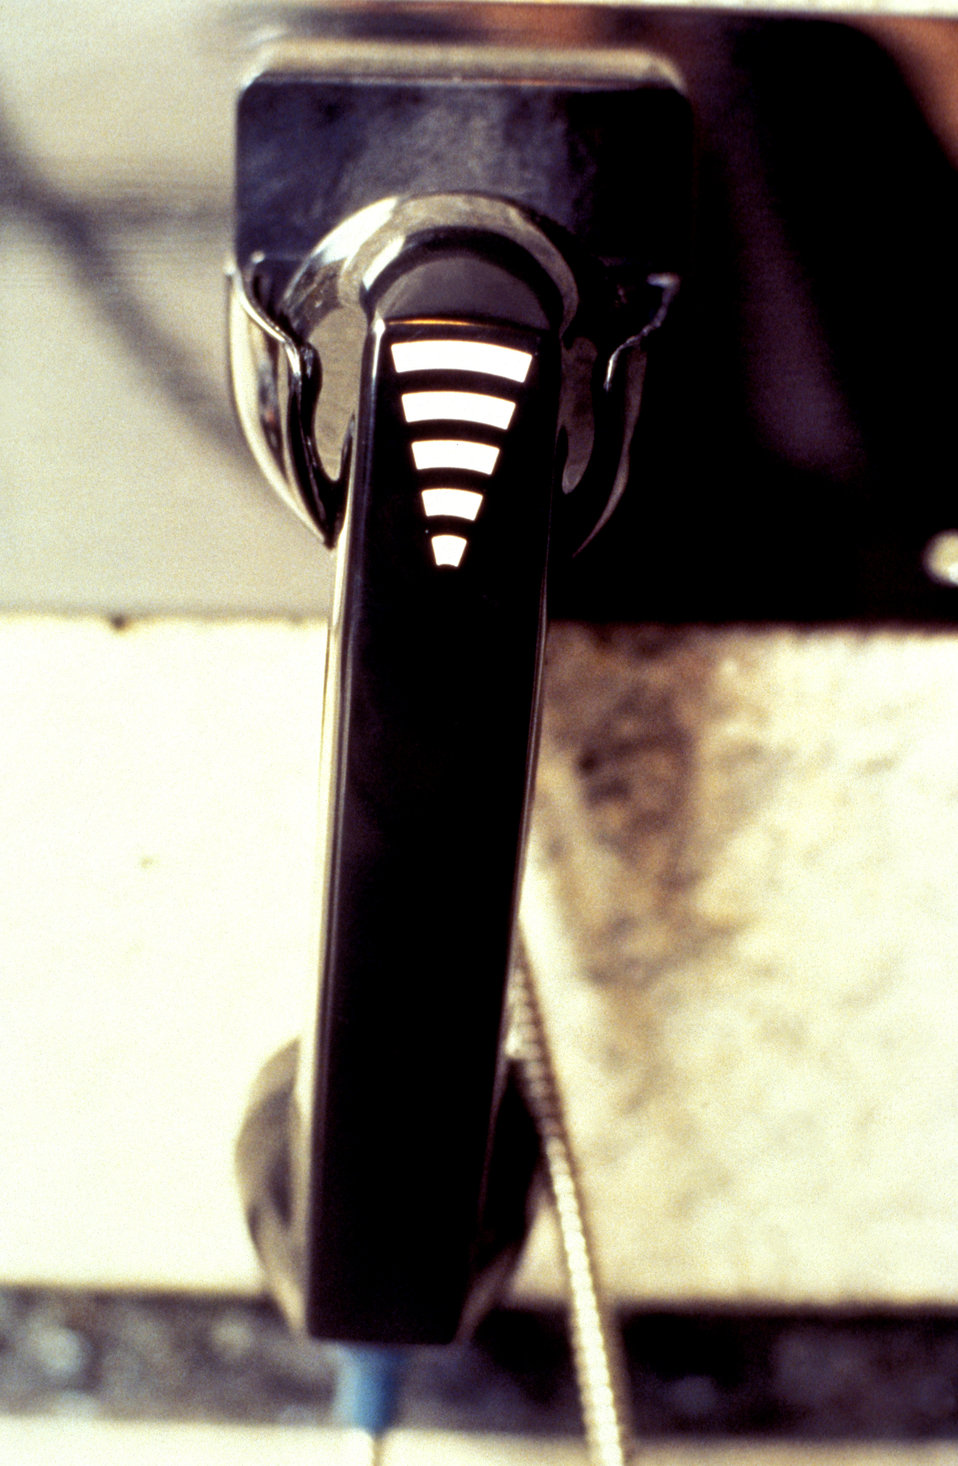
This 1995 photograph depicted a telephone receiver handset that had been equipped with a volume control, as well as the universal symbol for sound waves radiating on the handle in plan view. Volume controls are beneficial not only to the hearing impaired, but to those with normal hearing who might be making use of the telephone in a noisy environment, such as a city street.'The Center for Universal Design, CUD, is a national research, information, and technical assistance center that evaluates, develops, and promotes universal design in housing, public and commercial facilities, and related products.'